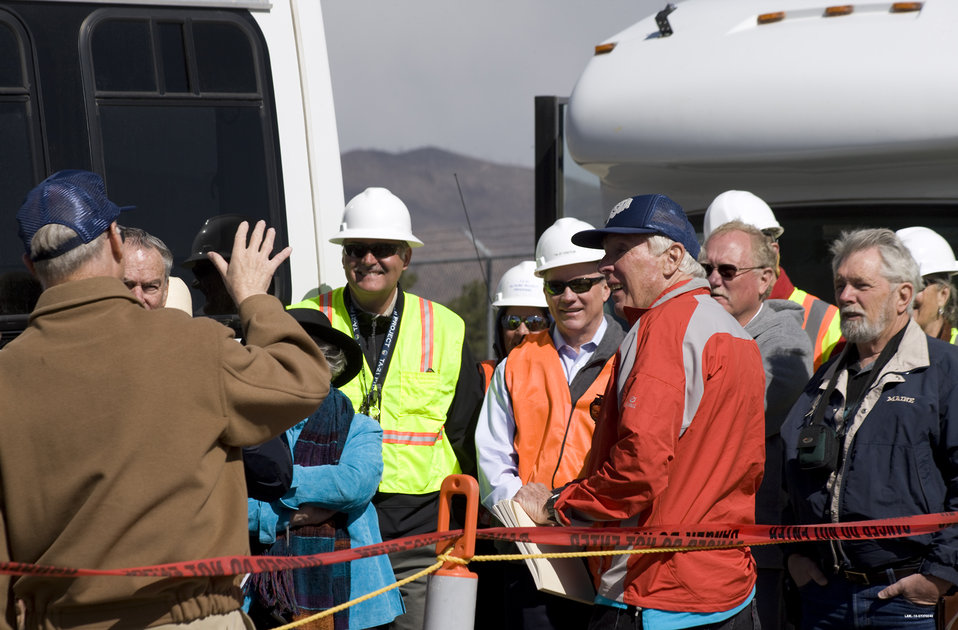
Fusion Researchers Gather to Say Goodbye to Pioneering Facility

More than 20 people who worked in the Tritium Systems Test Assembly (TSTA) facility gathered May 10 for a commemoration ceremony prior to demolition of the building.